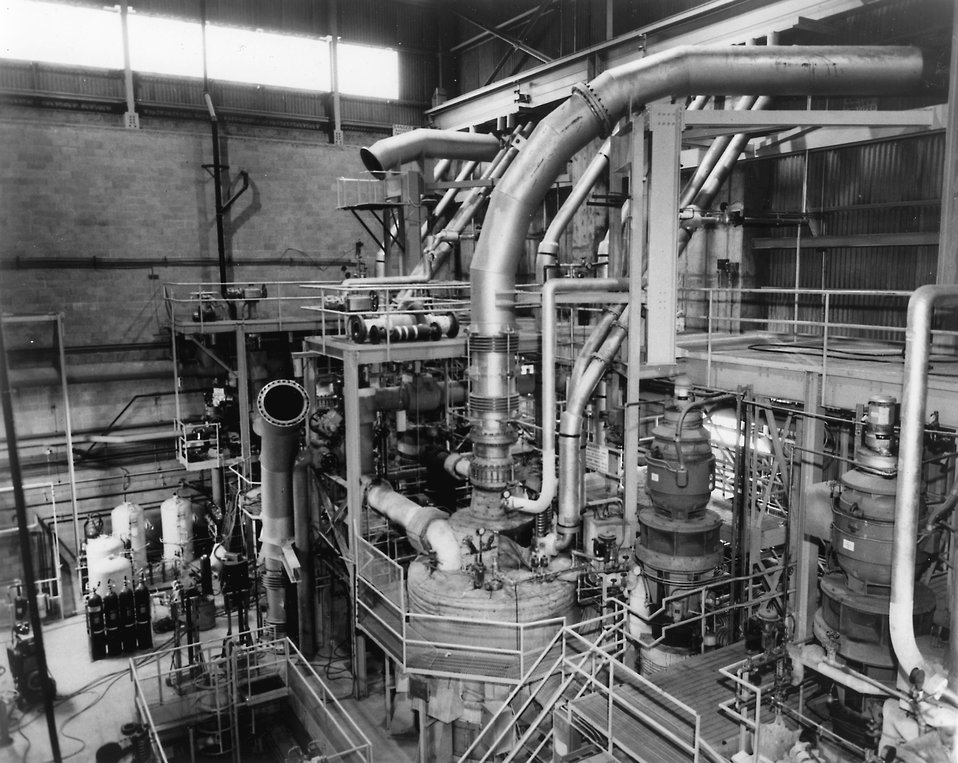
Enrico Fermi Atomic Power Plant, located at Lagoona Beach on Lake Erie, near Monroe, Michigan, about 35 miles southwest of Detroit. Circa 1972.